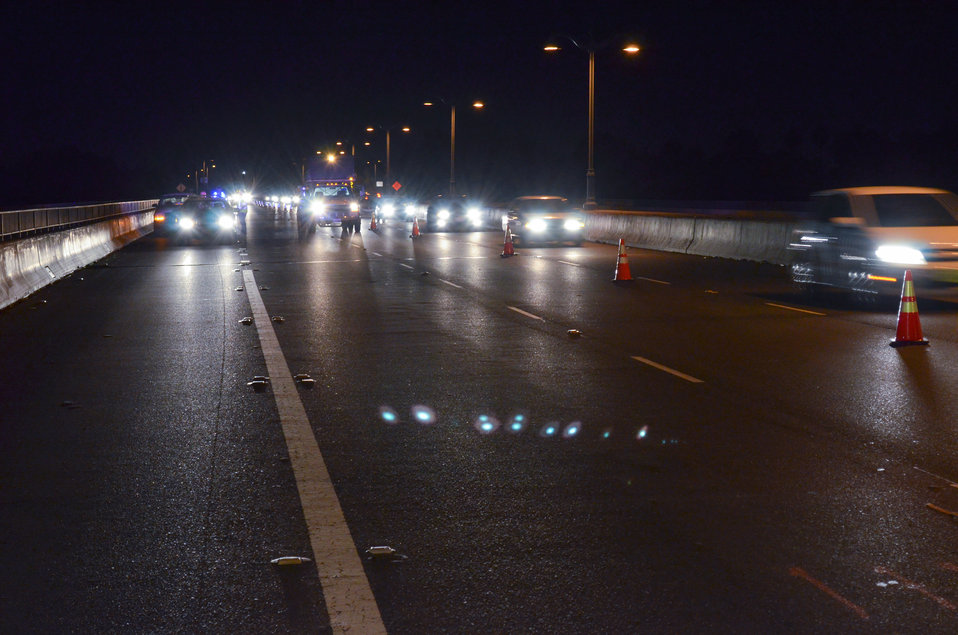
Temporary nighttime lane closures on Sacramento's Watt Avenue bridge

Temporary nighttime lane closures for Watt Avenue bridge are underway Aug. 15, 2013 in Sacramento Calif., as crews prepare to install a seepage cutoff wall in the levee beneath the bridge. U.S. Army Corps of Engineers representatives, the project contractor and the California Highway Patrol closed three lanes of traffic during non-commute hours in order to drill through the bridge to access the levee.